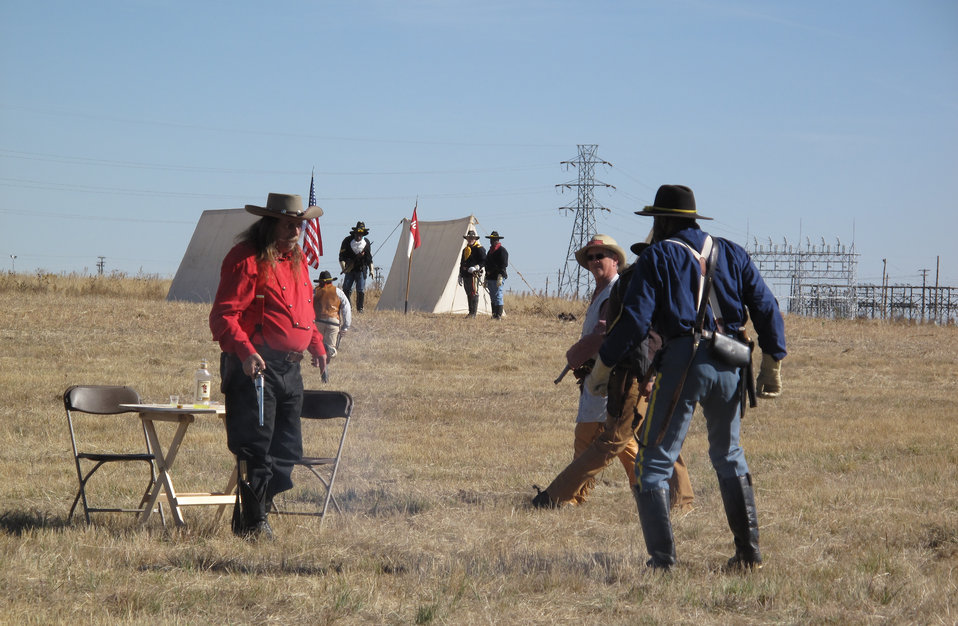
Refuge Round-up 2010

Saloon reenactment.